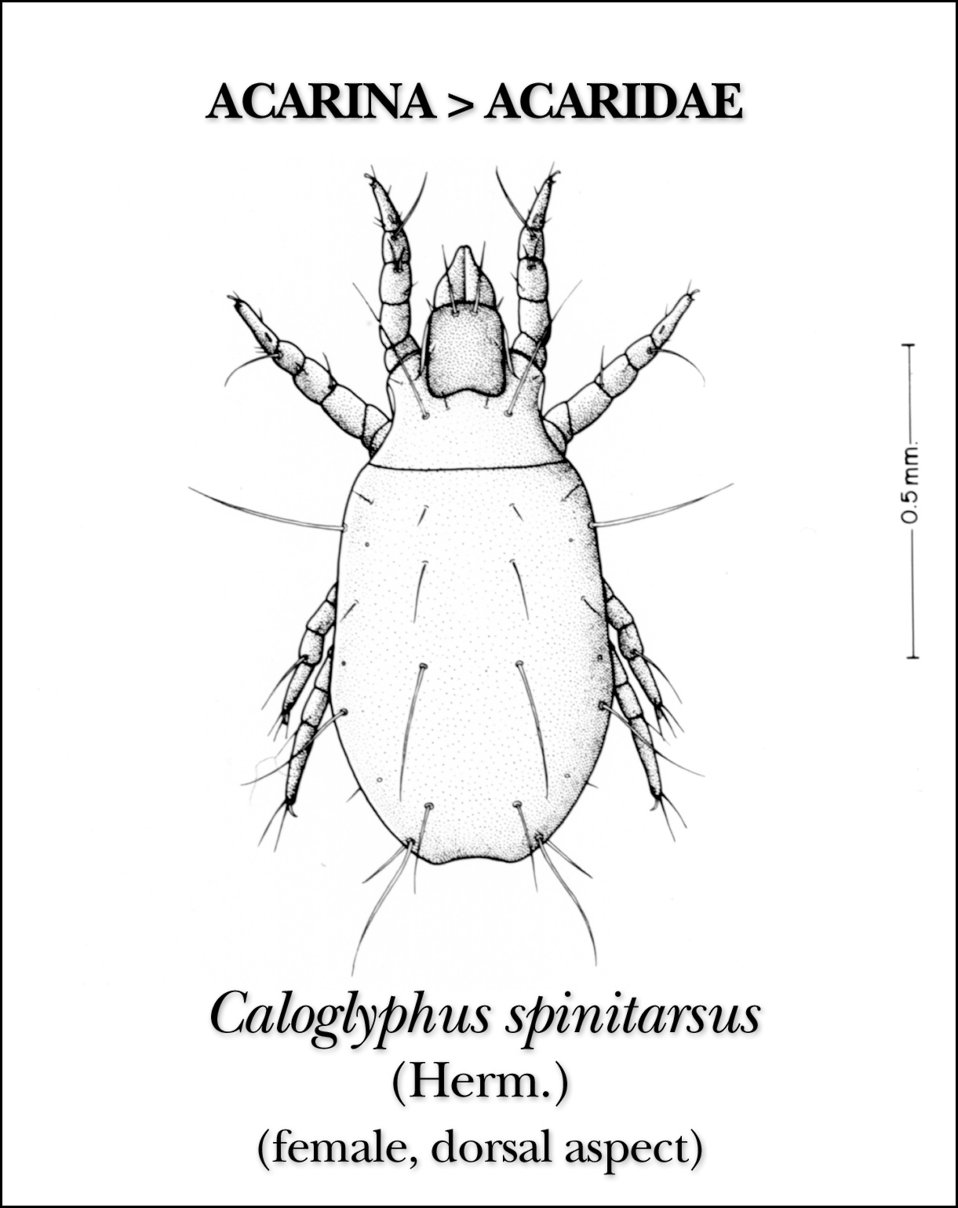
This illustration reveals the morphologic characteristics on the dorsal surface of the female mite Caloglyphus spinitarsus.